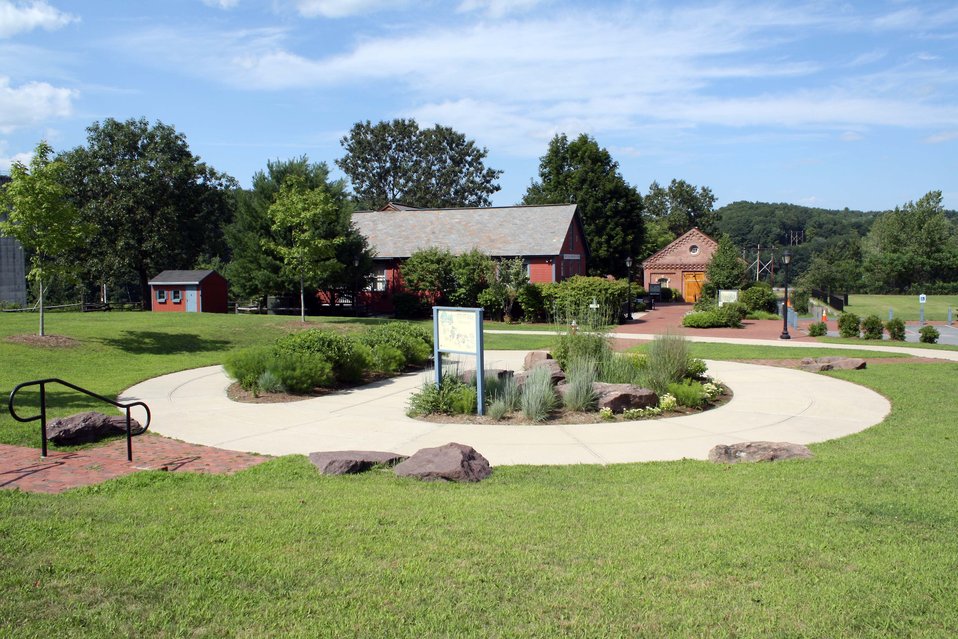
Great Falls Discovery Center

Turners Falls, Massachusetts.